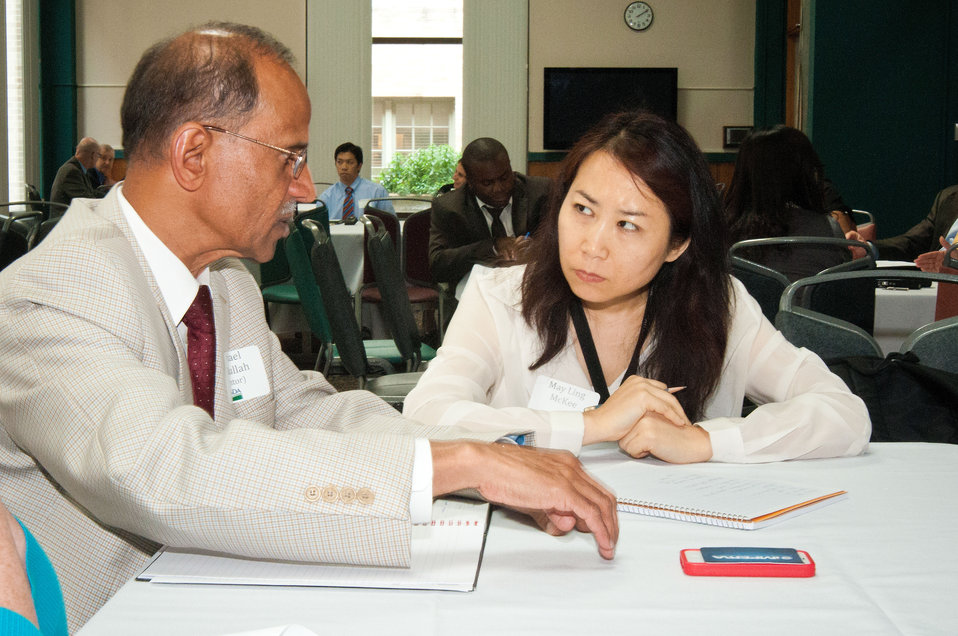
U.S. Department of Agriculture (USDA) National Agriculture Statistic Service (NASS) and mentor Michael Valivullah discusses “Customer Service” with May Ling McKee at USDA’s Office of Human Resources Management (OHRM) Virtual University’s Fall Flash Mentoring Event at USDA in Washington, D.C. on Thursday, Sept. 6, 2012 in Washington, DC.